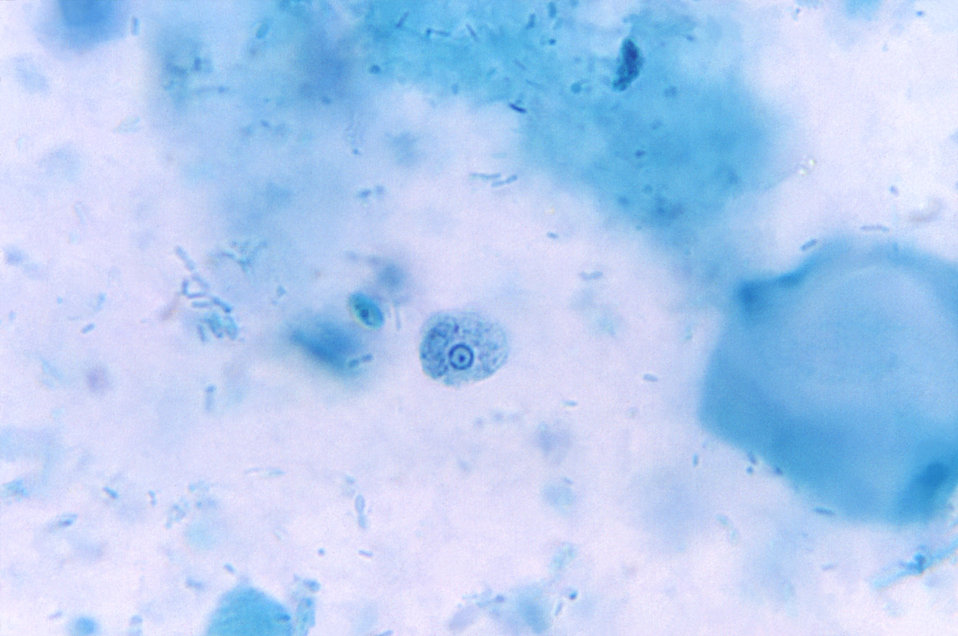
Entamoeba hartmanni trophozoite.